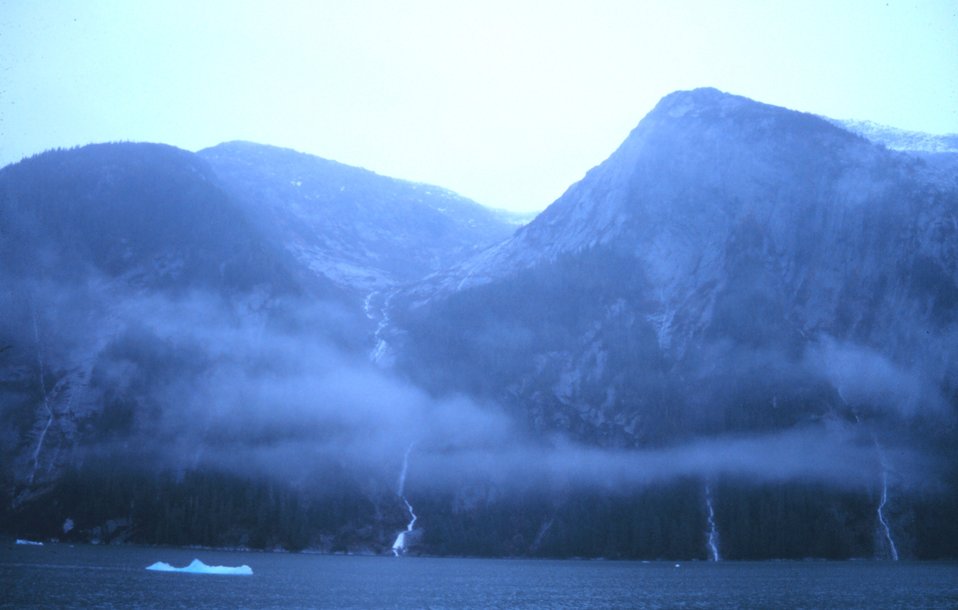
Waterfalls abound throughout Tracy Arm Fjord